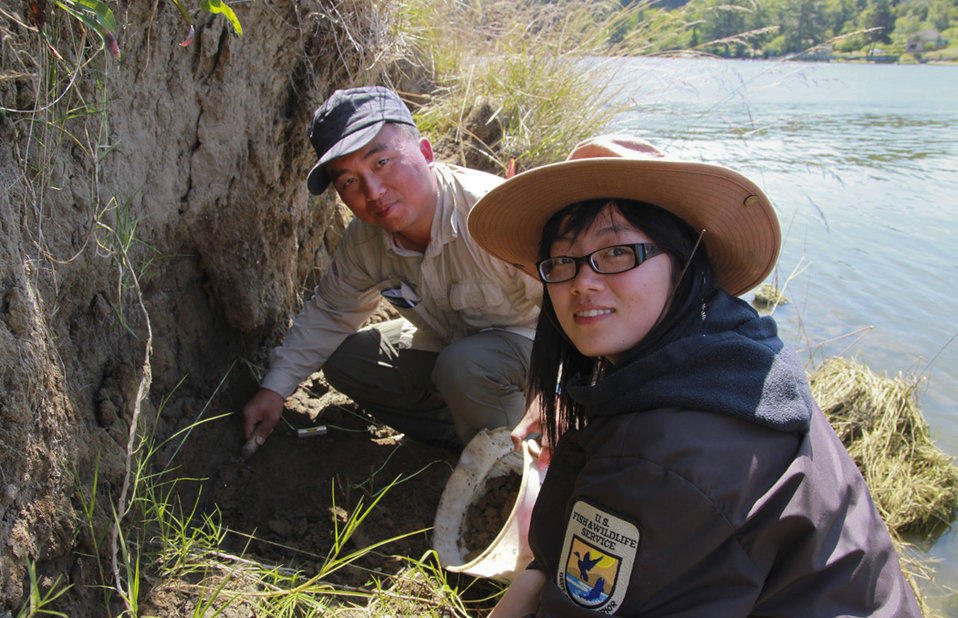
Xu & Miao